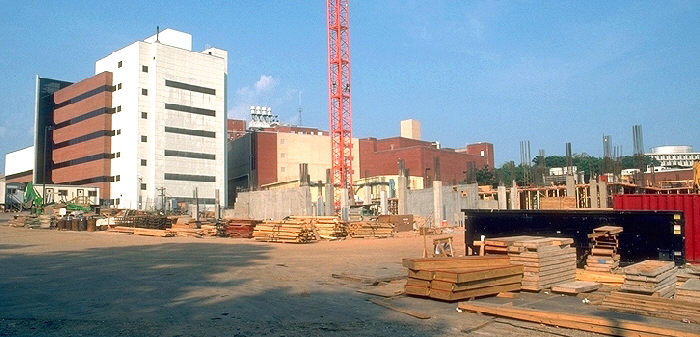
On the Centers for Disease Control's (CDC) Roybal Campus, located in metropolitan Atlanta, Georgia, this September, 1998 image depicts the early phases of construction of Building 17.